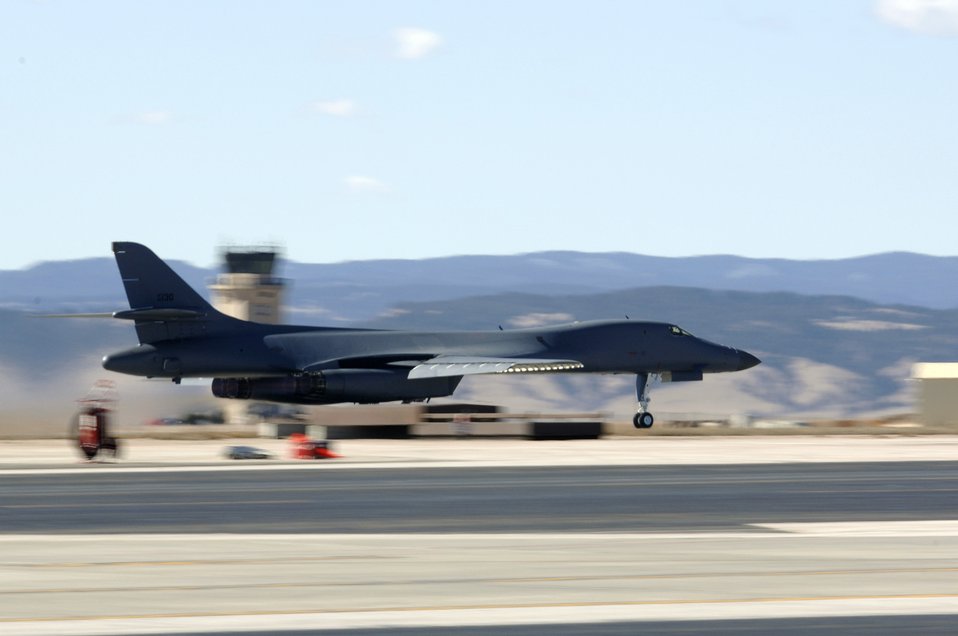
Fine-tuning the fleet

A B-1B Lancer from the 34th Bomb Squadron takes off from Ellsworth Air Force Base, S.D., March 06, for an operational readiness exercise mission. Base officials are preparing for a scheduled operational readiness inspection later this year.